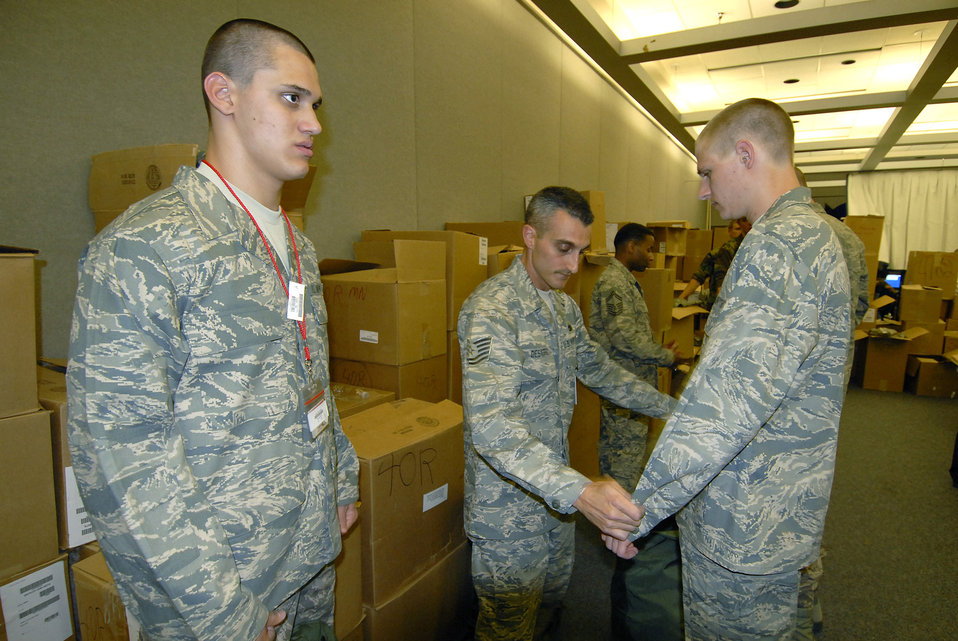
Class of 2012 Arrives

Tech. Sgt. Albert DeSarro checks the fit of an airman battle uniform as Basic Cadet Daniel Scully stands by June 26 at the U.S. Air Force Academy, Colo. The Class of 2012 was the first to receive the ABU as standard issue. Inprocesing marks the start of 38 days of Basic Cadet Training, which is designed to prepare basic cadet trainees for entry into the cadet wing. Sergeant DeSarro is assigned to the Cadet Wing standardization and evaluation section.